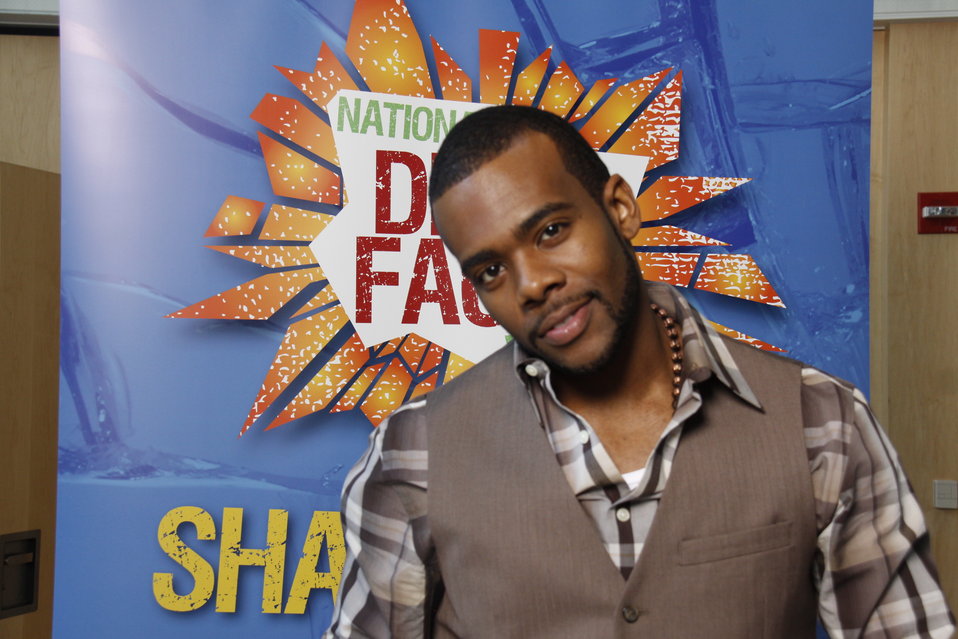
NDFW Mentor Event